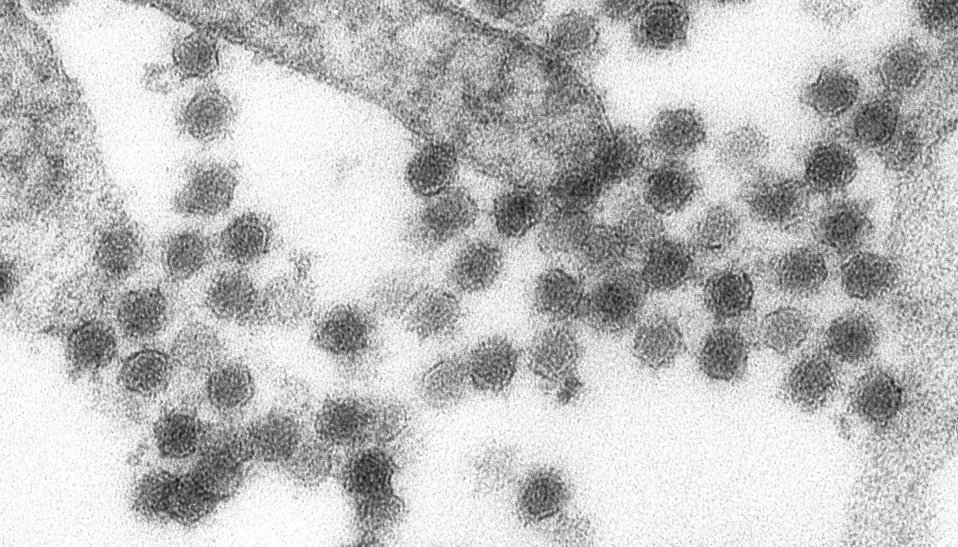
An electron micrograph of the West Nile virus.